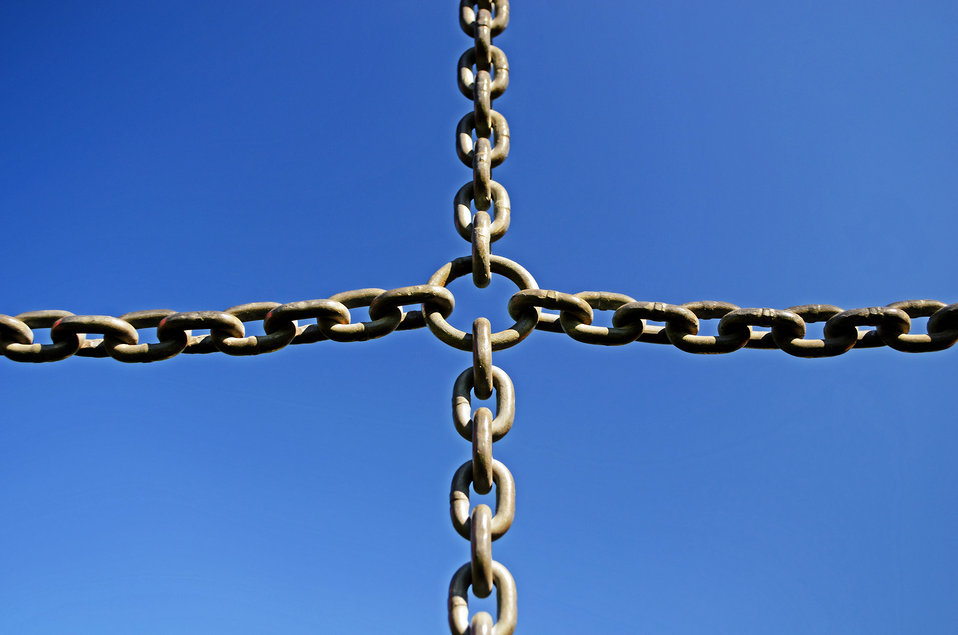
Chain - background.